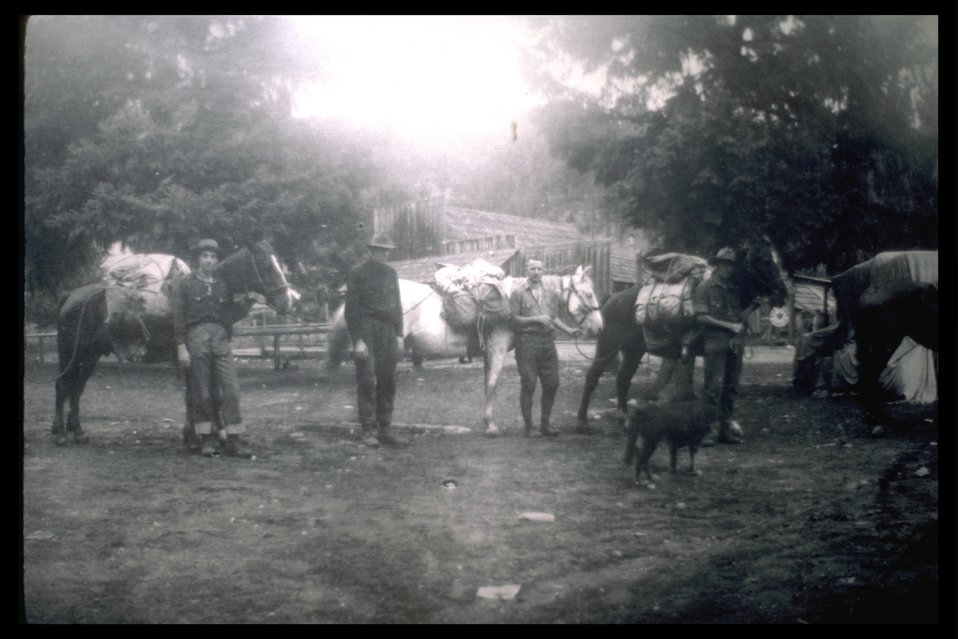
Black and White photo of surveyors with pack horses.